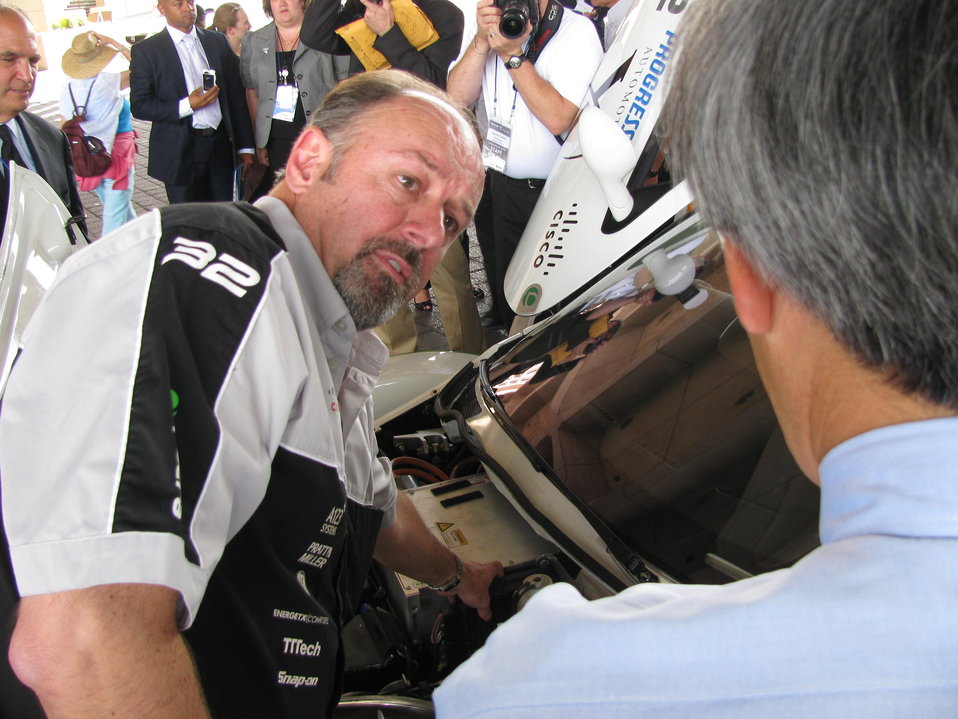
X Prize 045